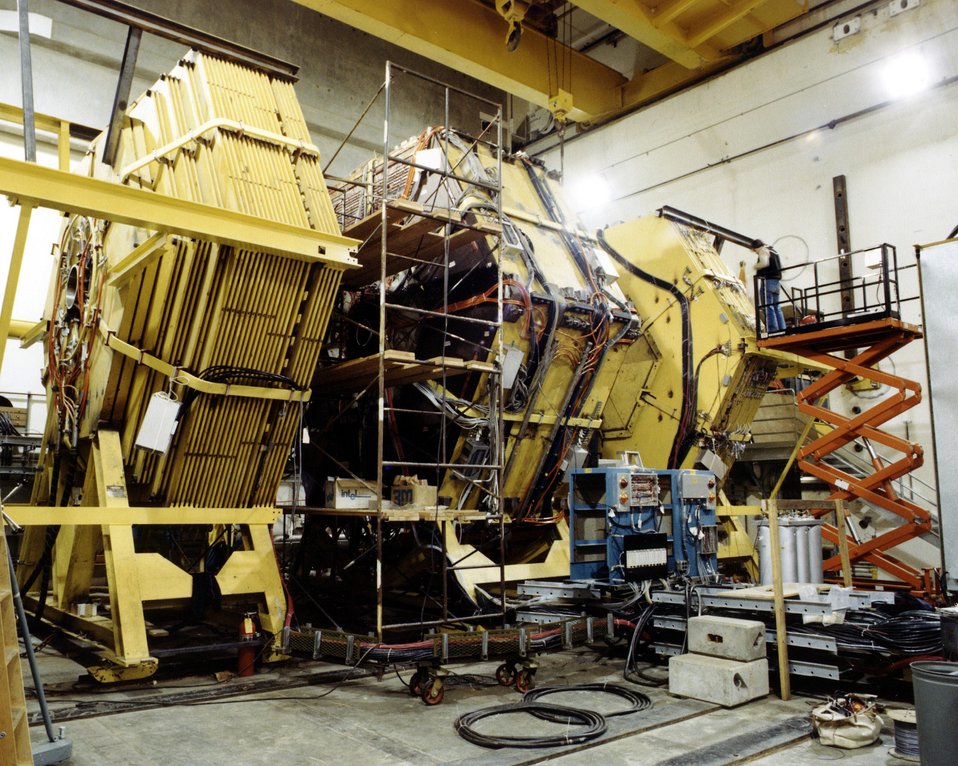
MAC DETECTOR, A MAGNETIC CALORIMETER USED IN MUON PHYSICS, NEWPARTICLE SEARCHES, AND TOTAL CROSS SECTION MEASUREMENTS.
THE POSITRON-ELECTRON PROJECT (PEP) IS A JOINT UNDERTAKING OF STANFORD LINEAR ACCELERATOR CENTER (SLAC) AND THE LAWRENCE BERKELEY LABORATORY (LBL). THE PEP MACHINE IS DESIGNED TO STORE BEAMS OF ELECTRONS AND POSITRONS CIRCULA- TING IN OPPOSITE DIRECTIONS AT SINGLE-BEAM ENERGIES BETWEEN 4 GEV AND 18 GEV. THE SOURCE OF THE BEAMS WILL BE THE PRESENT SLAC ACCELERATOR. THE COUNTER-ROTATING BEAMS OF ELECTRONS AND POSITRONS WILL COLLIDE WITH EACH OTHER AT SIX POINTS IN THE MACHINE. THESE COLLISION OR BEAM-INTERACTION POINTS WILL BE USED FOR HIGH-ENERGY PHYSICS EXPERIMENTS.